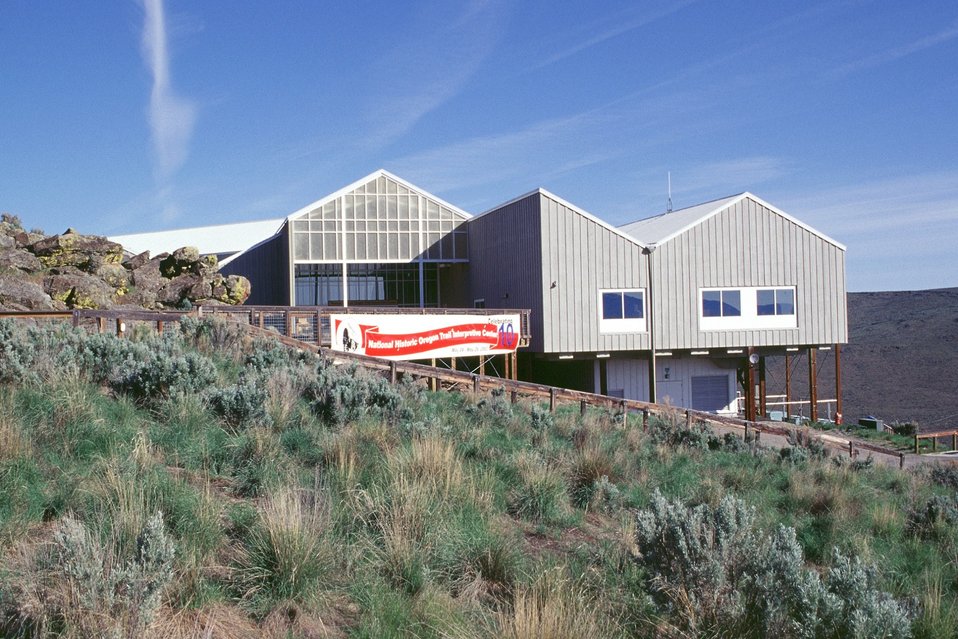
NHOTIC 10th Anniversary. Far stot of Interpretive Center.